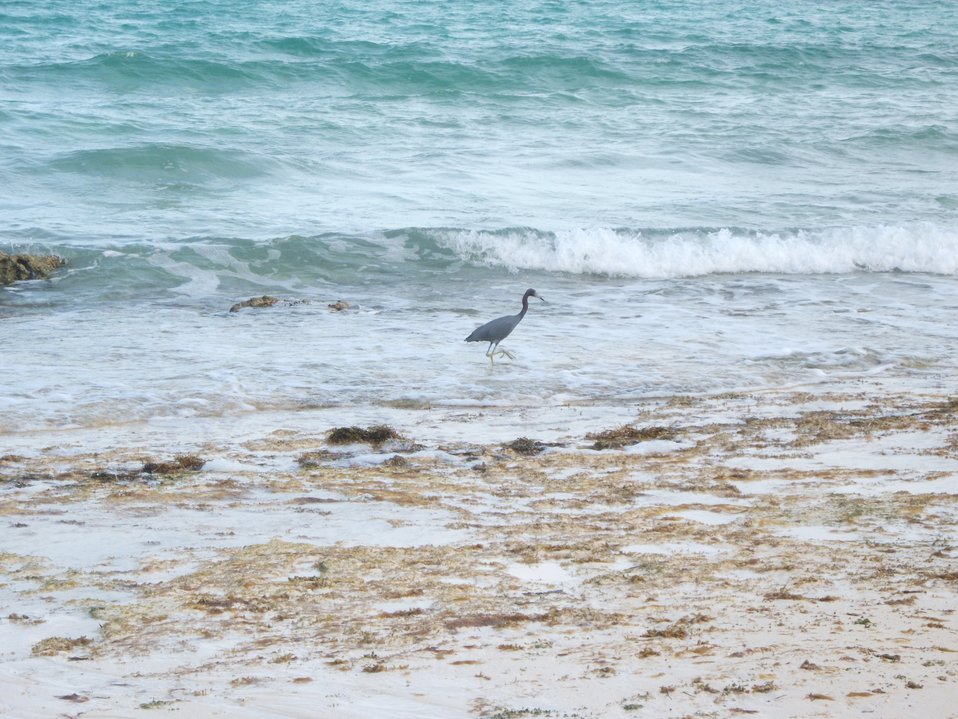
Little blue heron foraging at tide line

On South Andros Island